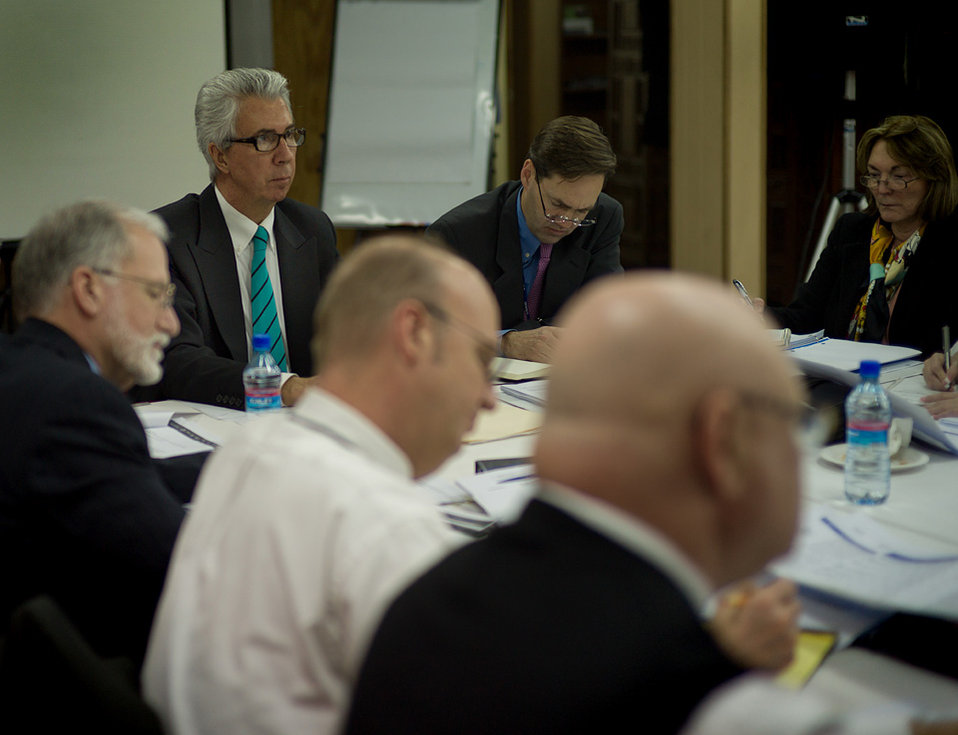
Greg Huger listening to the discussion